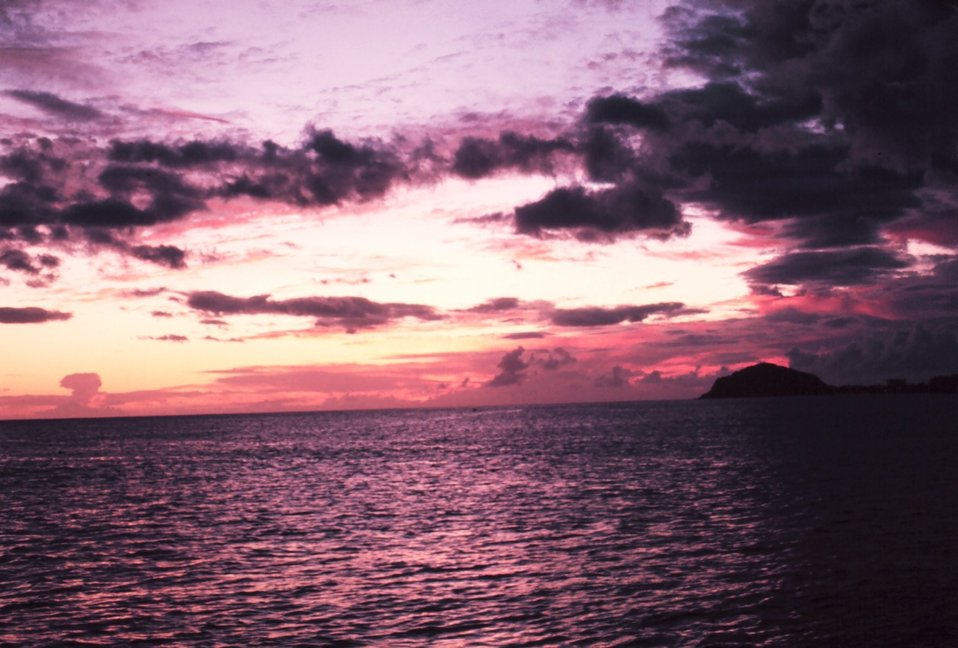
Waianae coast -southwest Oahu